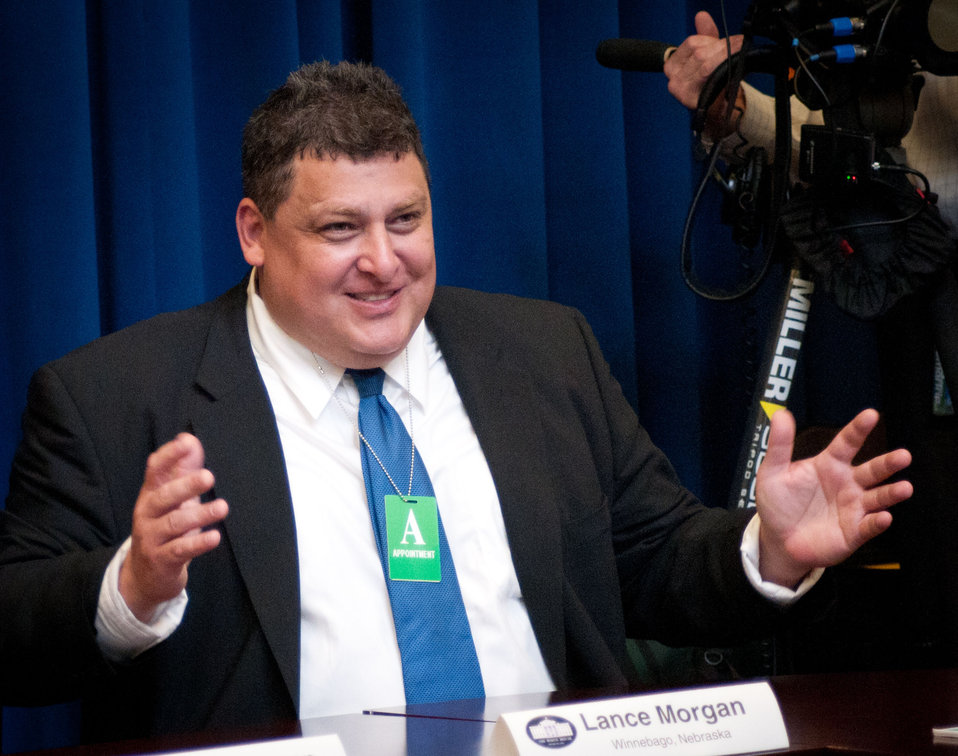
Lance Morgan, Ho-Chunk, Inc, Winnebago, NE, attended a meeting at the White House, in Washington, DC, on July 6, 2011. He was asked to participate along with President Barack Obama, Agriculture Secretary Tom Vilsack, the President's Domestic Policy Adviser Melody Barnes and rural communities leaders from across the country for the White House Rural Champions of Change event to strengthen rural communities and promote economic growth. Lance Morgan is an enrolled member of the Winnebago Tribe of Nebraska and President, CEO, and co-founder of Ho-Chunk, Inc., the award-winning economic development corporation owned by the Winnebago Tribe. Ho-Chunk, Inc. aims to promote economic self-sufficiency for the Winnebago Tribe and its members by creating jobs through its actively managed joint ventures and passive investments, including hotels, convenience stores, websites, and a temporary labor service provider. The company currently employs over 1,400 in ten states and three foreign countries, operates eighteen subsidiaries, and has revenues in excess of $195 million. Ho-Chunk, Inc. also founded and funds a non-profit corporation that provides supplemental capital to individuals and businesses. A graduate of the University of Nebraska (B.S. 1990) and Harvard Law School (J.D. 1993), Lance is also the managing partner in the law firm of Fredericks, Peebles and Morgan, LLP; he specializes in Indian law and economic development issues.